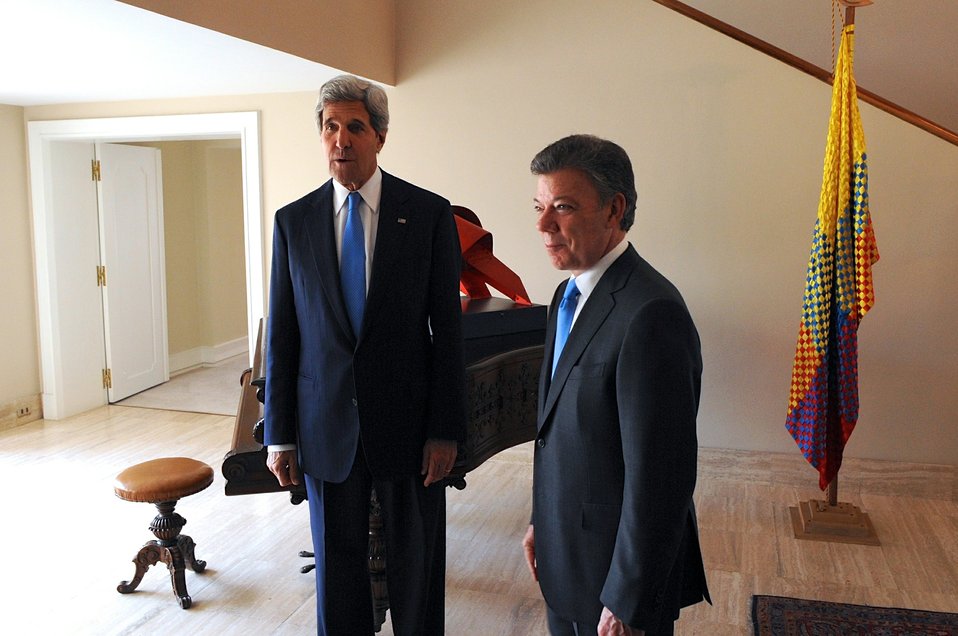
Secretary Kerry Meets With Colombian President Santos

U.S. Secretary of State John Kerry stands with Colombian President Juan Manuel Santos before their meeting at Casa de Narino in Bogota, Colombia, on August 12, 2013.